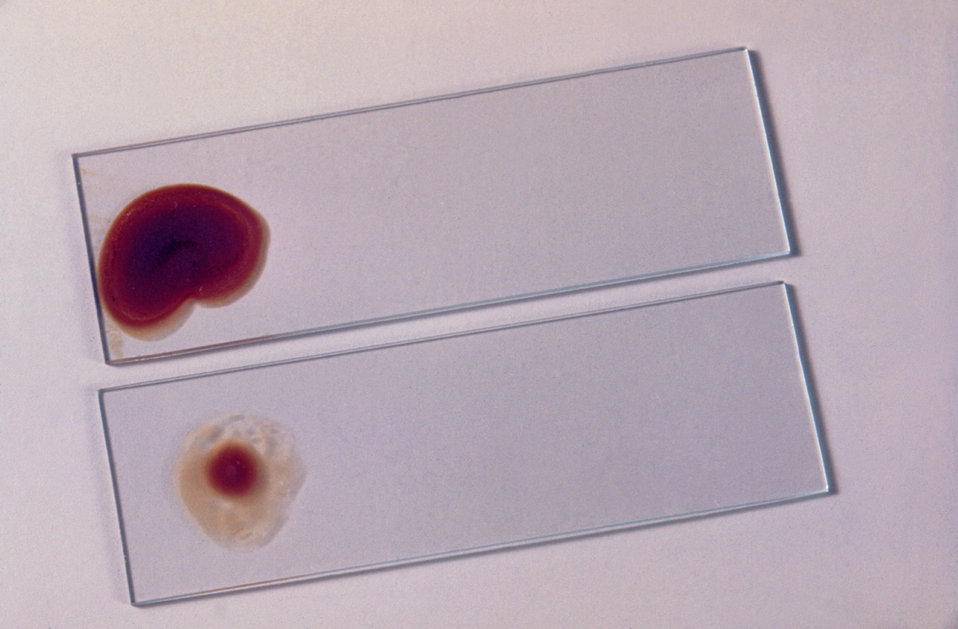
This is an example of two poor quality glass microscope slides that were intended to have been blood smear films.